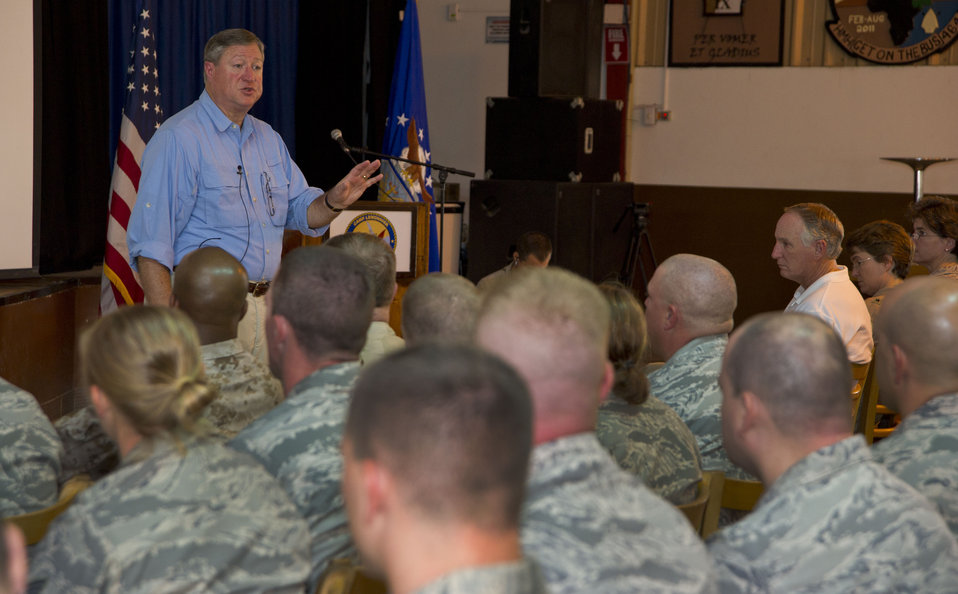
SecAF travels to Djibouti

Secretary of the Air Force Michael Donley discusses Air Force topics with Airmen deployed to Camp Lemonnier, Djibouti,on Aug. 22, 2012. Donley visited Camp Lemonnier to see how the Air Force supports the Combined Joint Task Force - Horn of Africa mission.